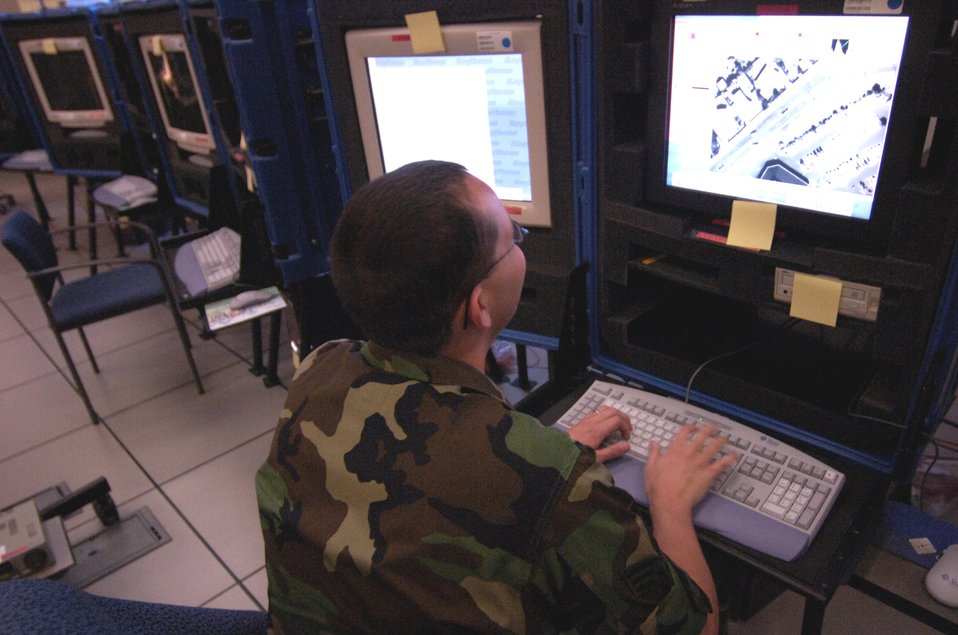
Technology for the battlefield

HICKAM AIR FORCE BASE, Hawaii (AFPN) -- Senior Airman Joshua Stimmel looks over imagery during a training mission at a distributed ground stations for the Predator unmanned aerial vehicle. Unmanned aerial vehicles represent a new way of using technology to remotely affect the battlefield.